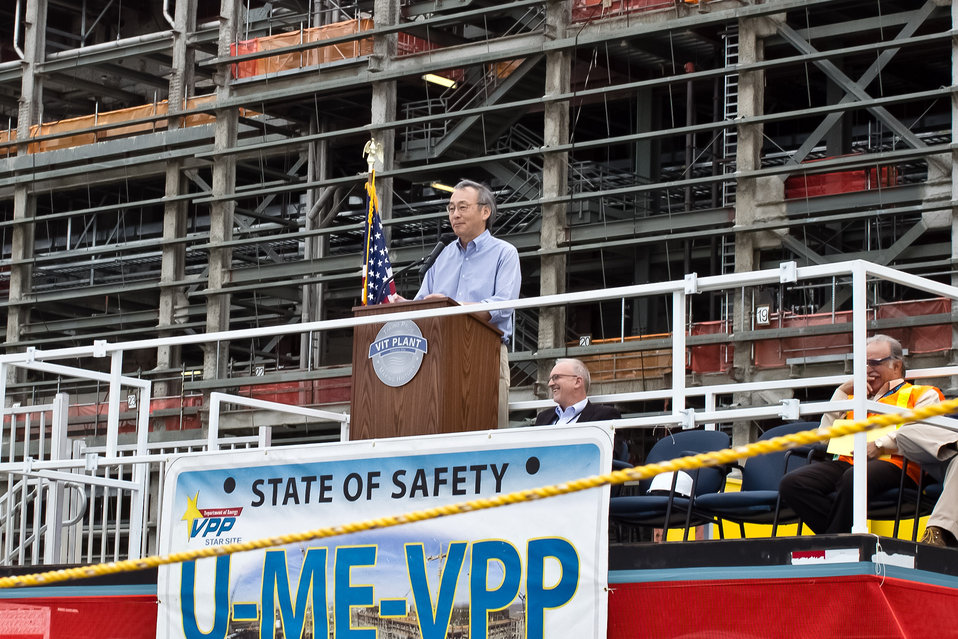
Secretary Chu Visits Hanford

DOE Secretary Chu meets with hundreds of Waste Treatment Plant workers during his July 15, 2012 visit to the Hanford Site.